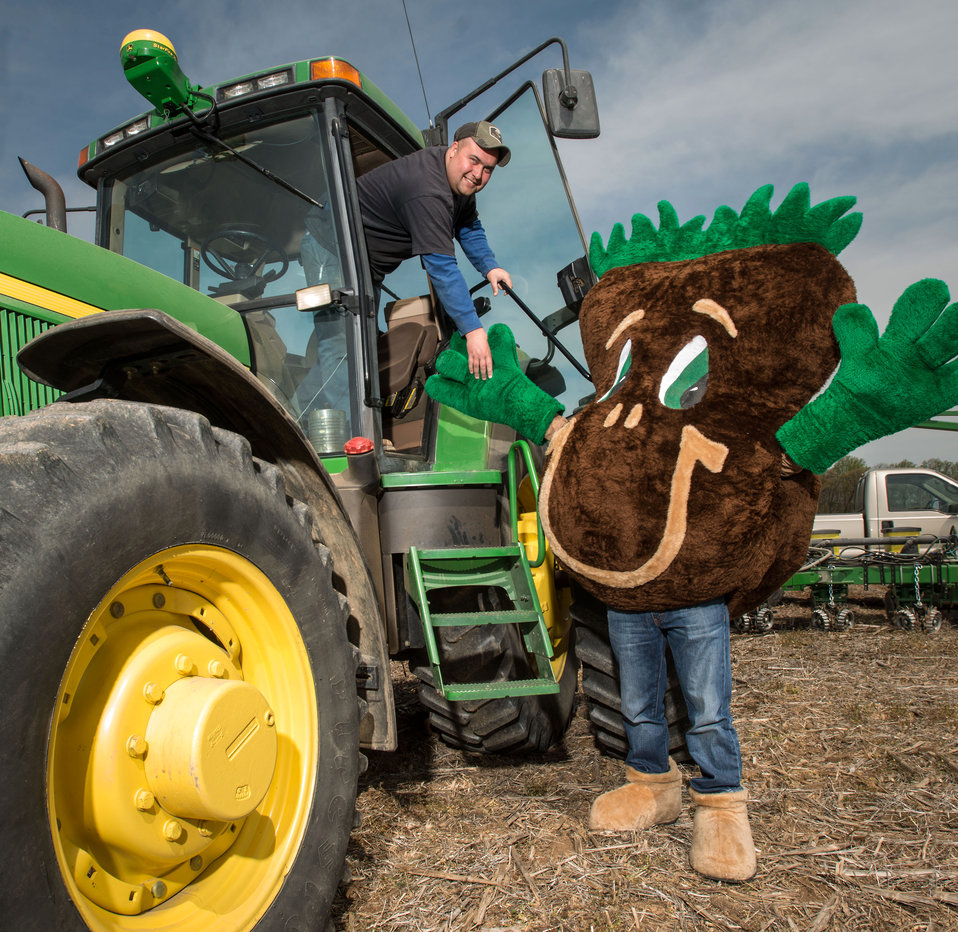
The U.S. Department of Agriculture’s (USDA) Natural Resources Conservation Service (NRCS) mascot Sammy Soil on the Sunny Ridge Farm in Laytonsville, MD on Monday, Apr. 28, 2014. The Sunny Ridge Farm owned by the Stabler family uses a number of conservation practices to promote soil health and water quality. No-till cropping systems use cover crops that help water soak deep into the soil and machines work lightly on top of the soil preserving vertical pores that are water’s pipeline to the roots. Cover crops prevent erosion, improve soil health, hold water, supply nutrients, and suppress weeds and pests. Fenced waterways keep livestock away from the streams and drainage to low points of fields, which allows grass, trees and other vegetation to grow. The plants take up nutrients from the livestock effluent, reducing pollution to waterways. The farm also has a well-designed agrichemical facility for an environmentally safe area to handle and store tanks of on-farm chemicals.